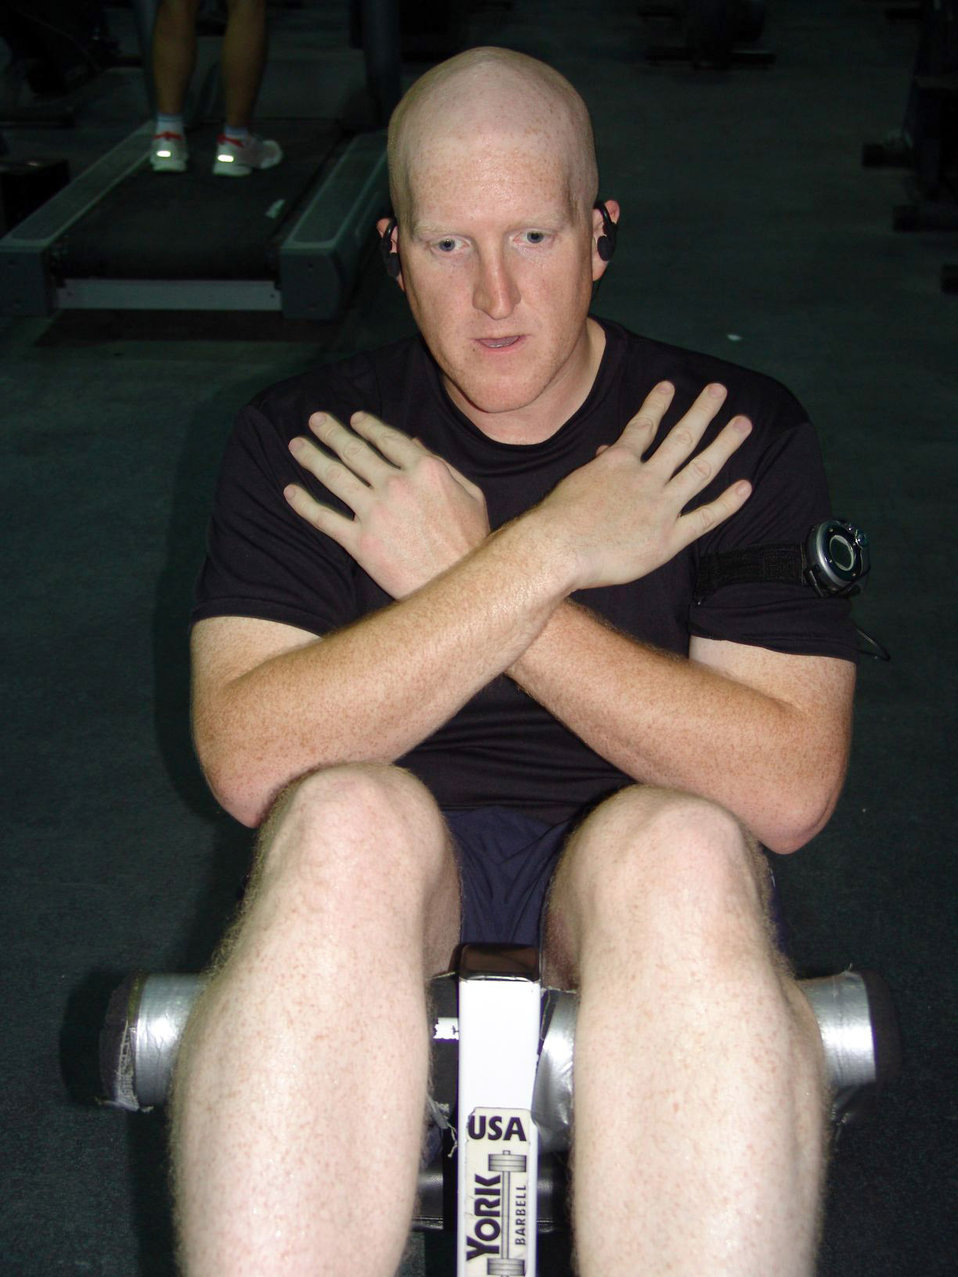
Airman gets 'fit to fight' in Southwest Asia

SOUTHWEST ASIA -- Staff Sgt. Dan Foster performs a set of incline sit-ups at the fitness center at a forward-deployed location Aug. 26. Sergeant Foster performs at least 100 sit-ups every day as part of his new physical fitness routine. Since June 7, he has lost 53 pounds by altering his eating habits and adhering to a strict exercise regimen. He is assigned to the 386th Expeditionary Communications Squadron and is deployed from Little Rock Air Force Base, Ark.